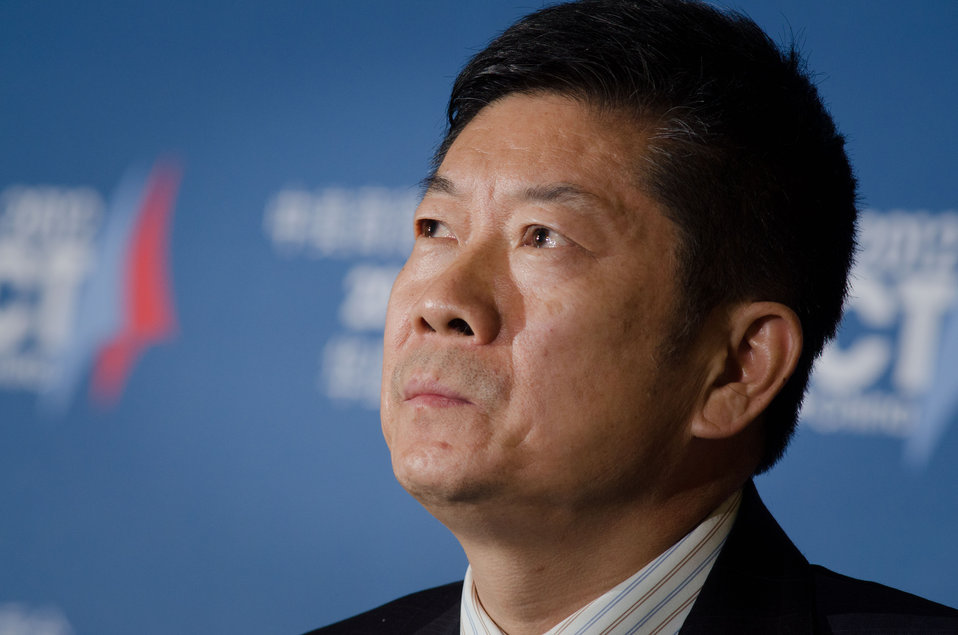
China’s Vice Minister of National Copyright Administration of China (NCAC) Yan Xiaohong answers questions from international news media journalists at the 23rd Session of the U.S. China Joint Commission on Commerce and Trade (JCCT) press conference at the Andrew W. Mellon Auditorium in Washington, D.C. on Wednesday, Dec. 19, 2012. The JCCT holds high-level plenary meetings on an annual basis to review progress made by working groups that focus on a wide variety of trade issues. These working groups meet throughout the year to address topics such as intellectual property rights, agriculture, pharmaceuticals and medical devices, information technology, tourism, commercial law, environment, and statistics.